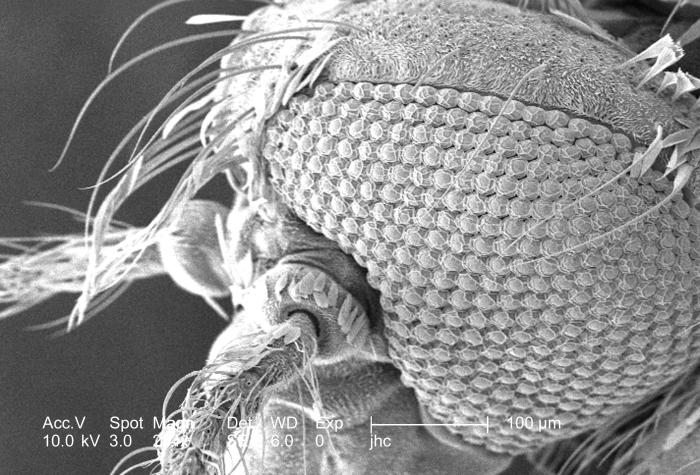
At a relatively low magnification of 234x, this 2006 scanning electron micrograph (SEM) depicted some of the ultrastructural morphologic surface features of the head of an Anopheles gambiae mosquito. Note the wondrous construct of the mosquito's compound eye with its numerous subunits known as "ommatidia", which when synergistically unified, provide the insect with a mosaic representation of its environment. Also of interest are the antennae, which emanate from the insects head, from a structure known as the "clypeus". Each antenna is composed of three regions: the pedicel, scape, and flagellum respectively.